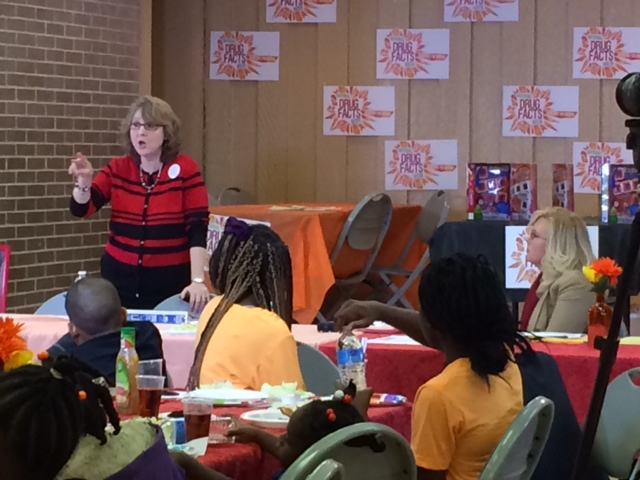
Florida holds NDFW Event

Folks from Orlando, Florida are 'Shattering the Myths' during the 2014 National Drug Facts Week at Orlo Vista Park.